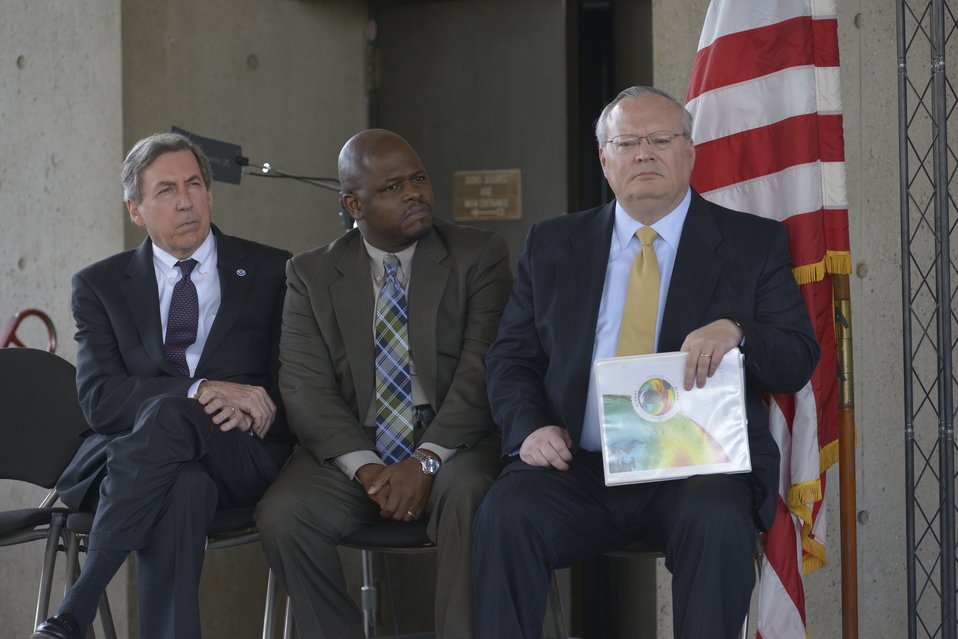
U.S Postal Services introduces a new Global: Sea Surface temperatures forever stamp at the Earth Day program at Department of Energy on April 22, 2014. ( T.Day, C.Williams, C.Anderson II, J.Colin Ph.D, Dr. K. Sullivan, K.Tobin Ph.D, W. Gicher Jr)